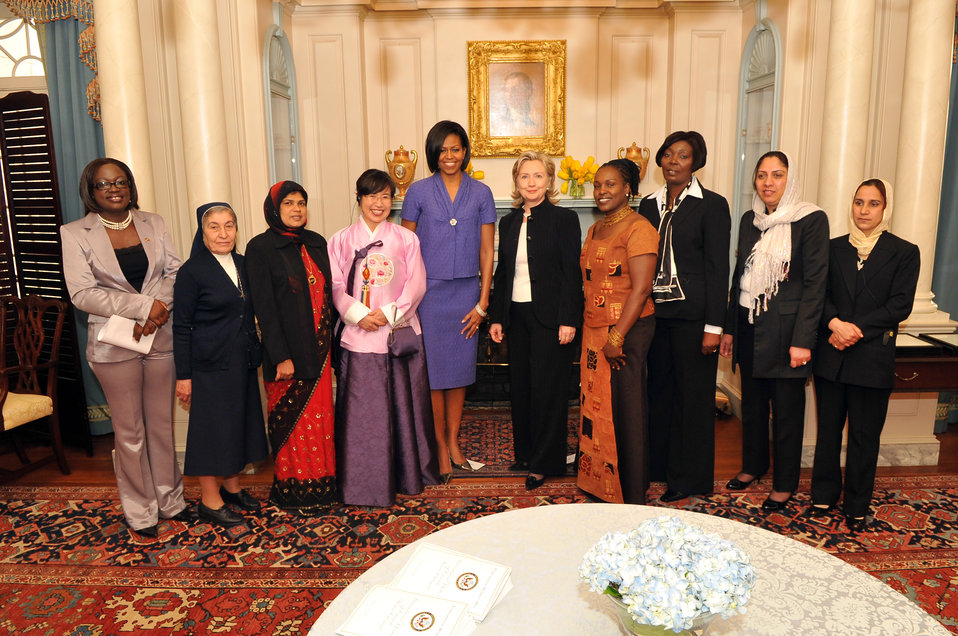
Secretary Clinton and First Lady Michelle Obama Stand With 2010 Honorees

U.S. Secretary of State Hillary Rodham Clinton and First Lady Michelle Obama stand with the honorees at the 2010 International Women of Courage at the U.S. Department of State, Washington, D.C. March 10, 2010.